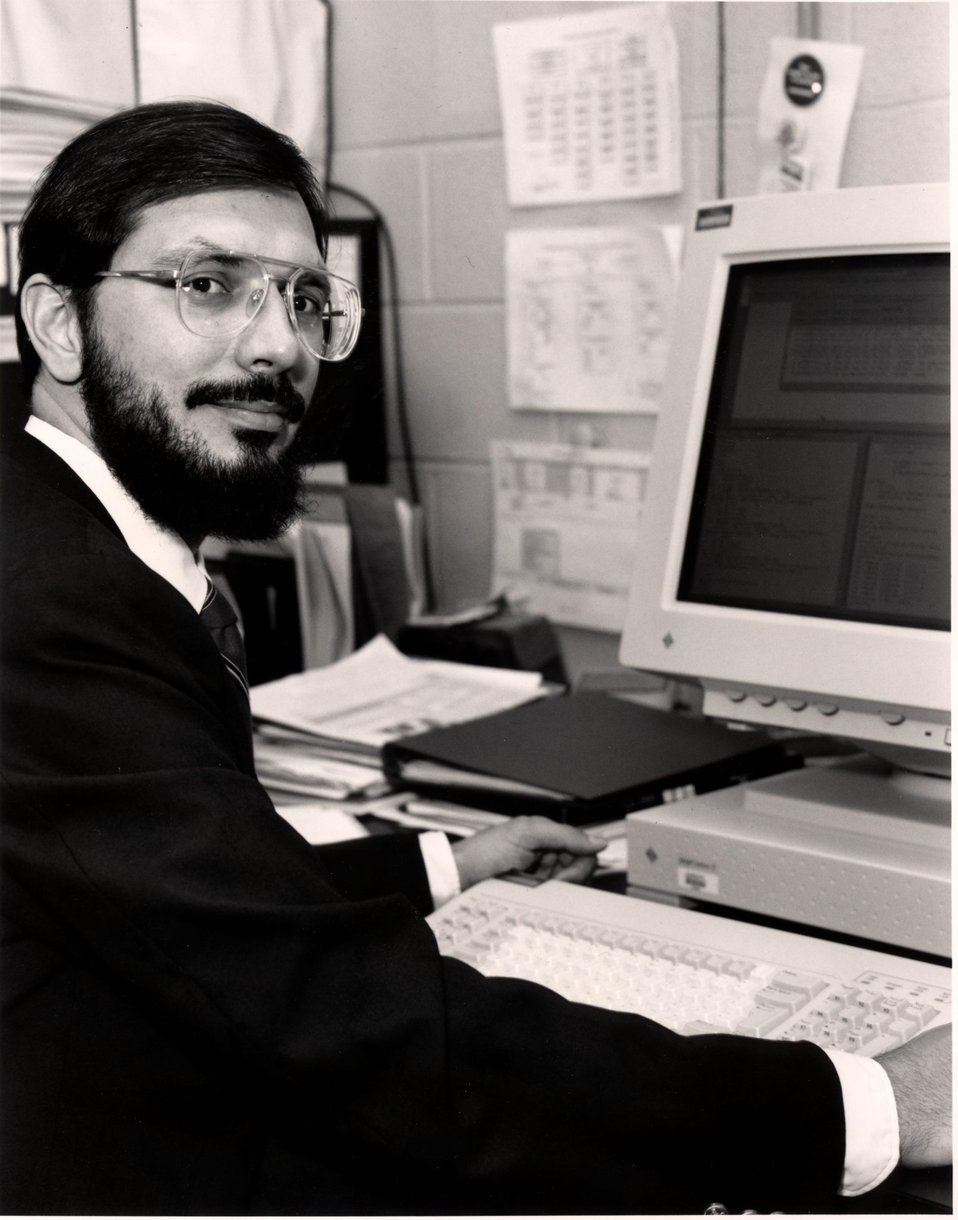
Dr.Russell hulse, princeton plasma physics laboratory.